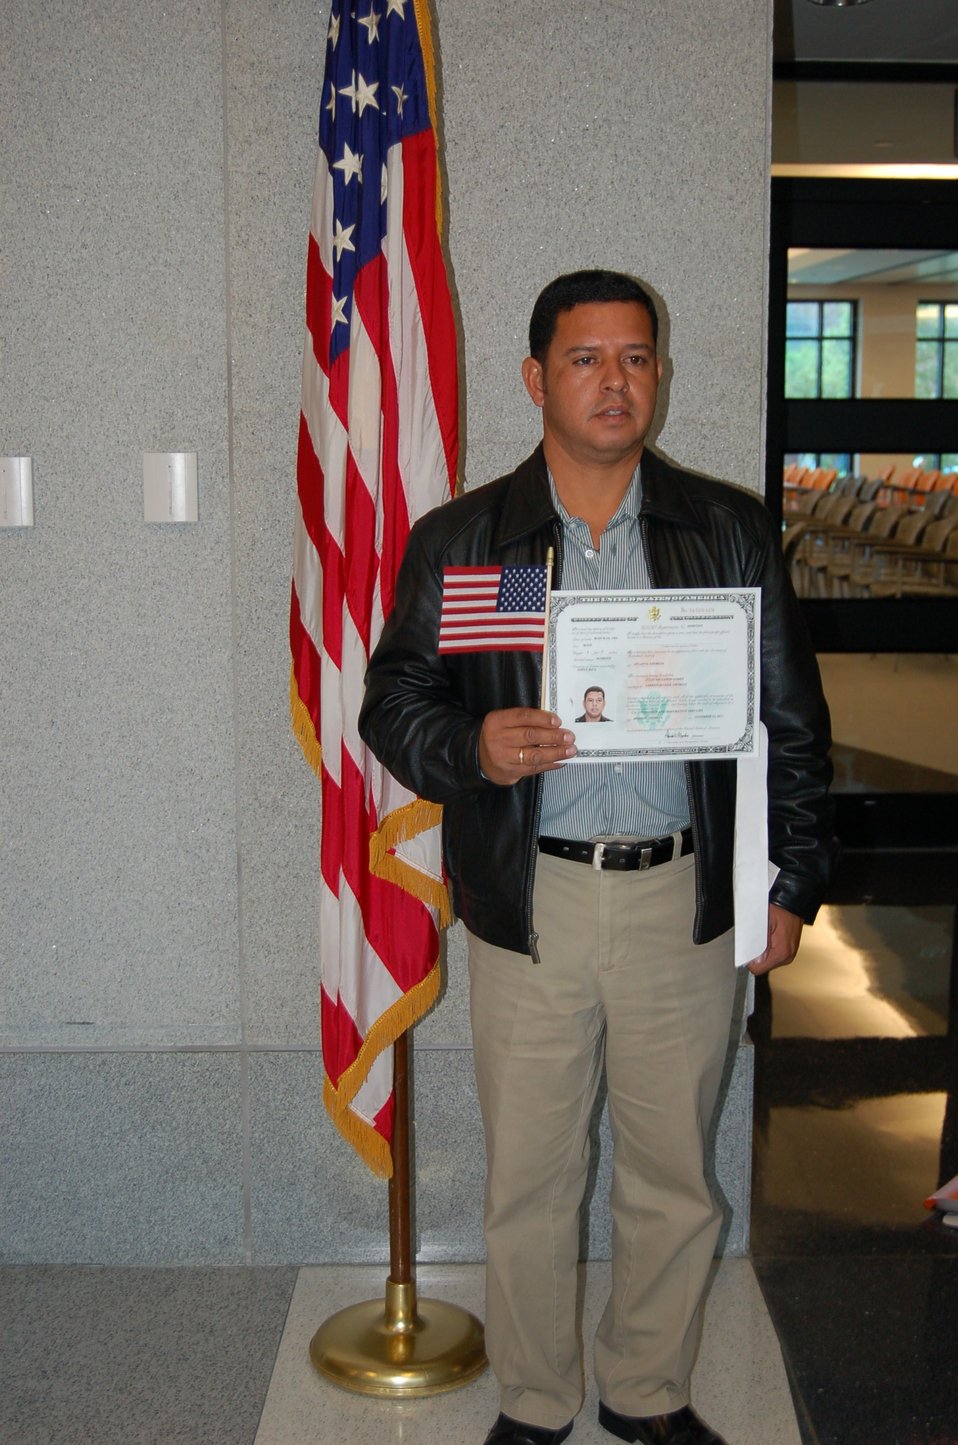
New Citizens